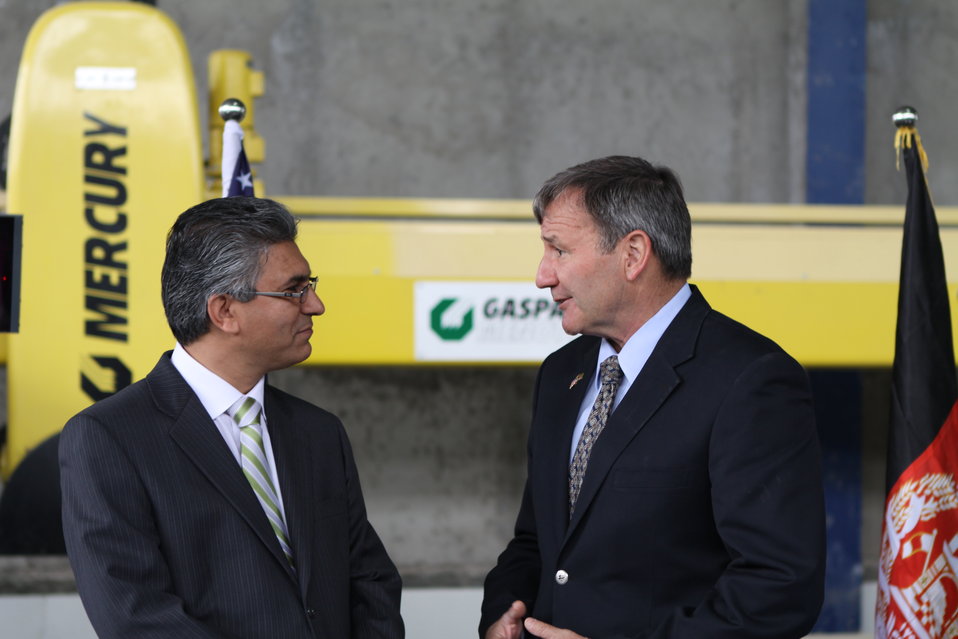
100525 Hirat Marble Conference 115